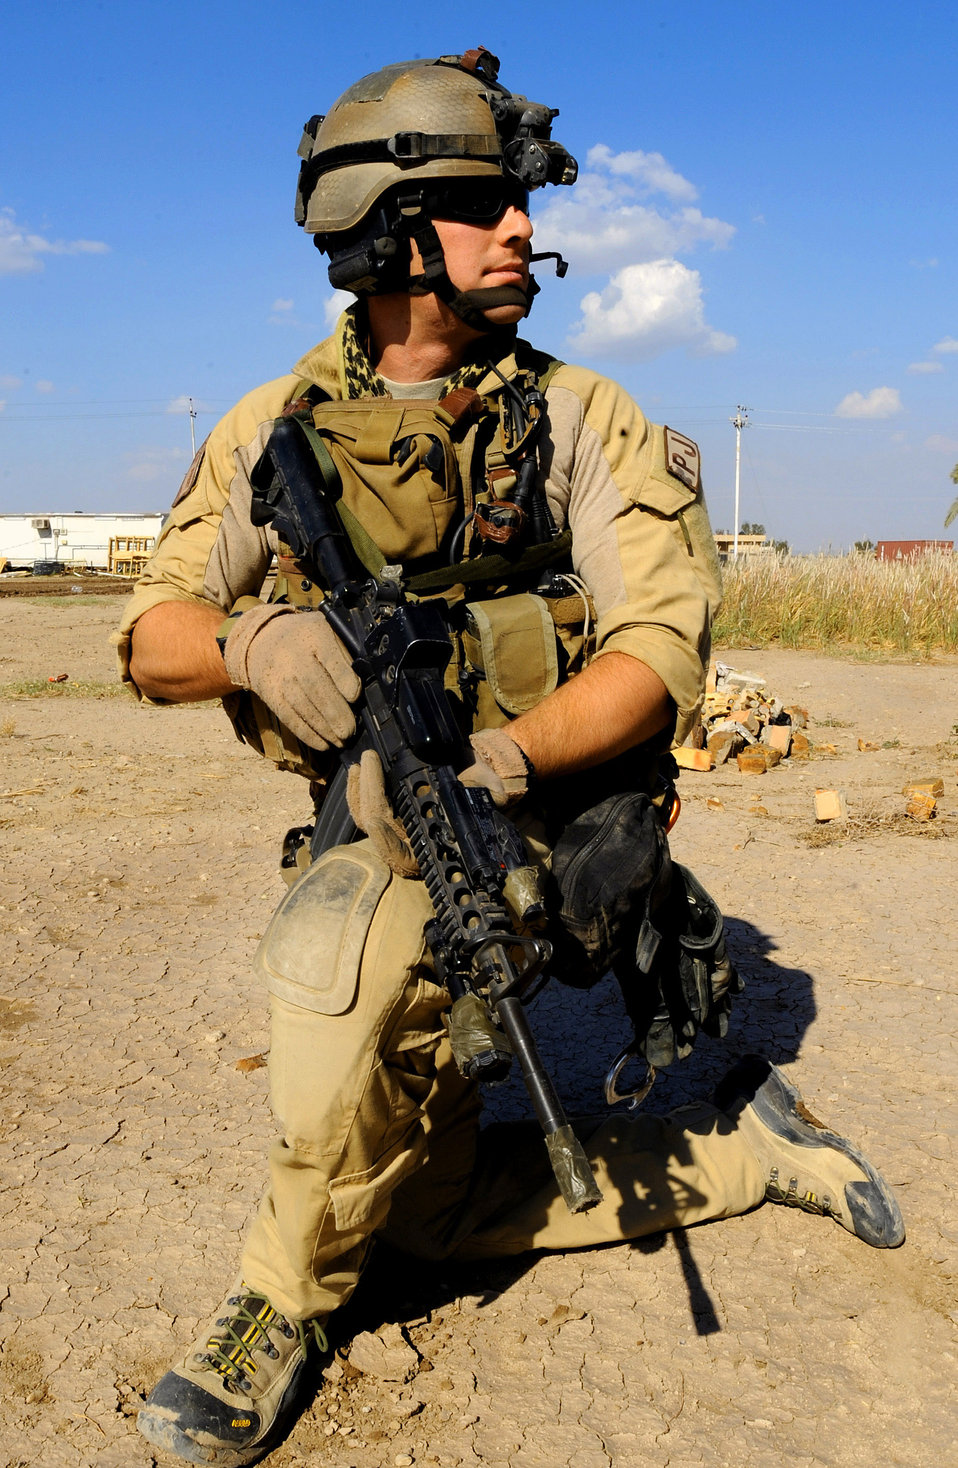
Training for all contingencies

During a proficiency exercise April 10, Staff Sgt. Jason Stitt scans the area for unusual activity outside Baghdad, Iraq. He is an HH-60 Pave Hawk helicopter gunner assigned to the 64th Expeditionary Rescue Squadron at Joint Base Balad, Iraq.